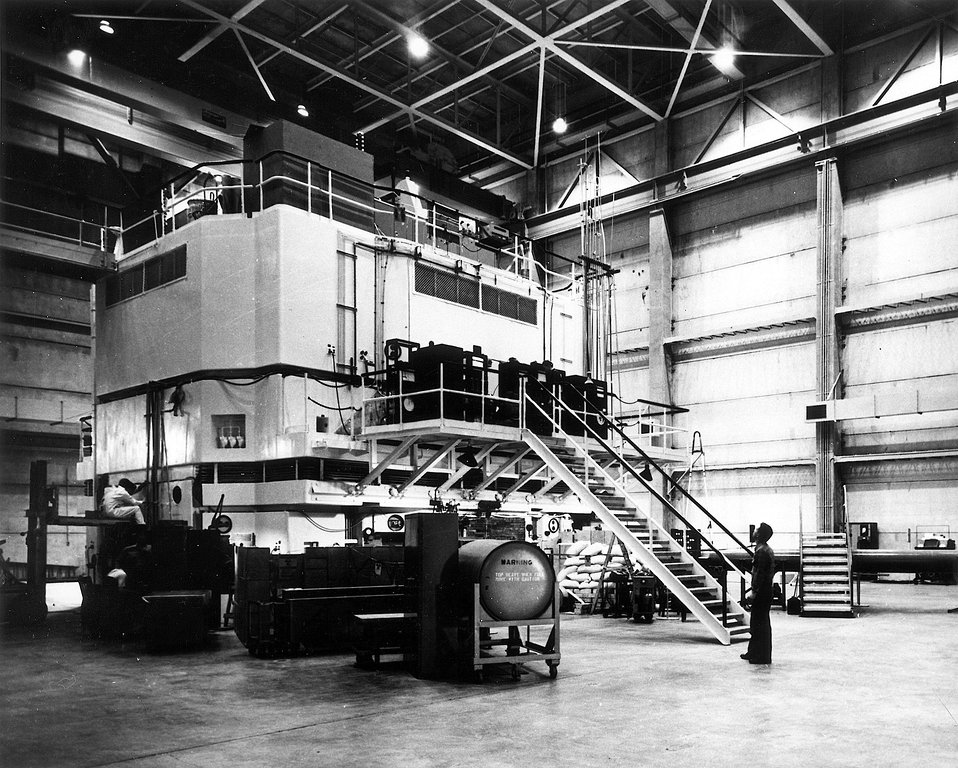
National Reactor Testing Station, Idaho... The Materials Testing Reactor from the southwest corner of the building. The crystal spectrometer shielding is seen in the foreground. Circa 1958.